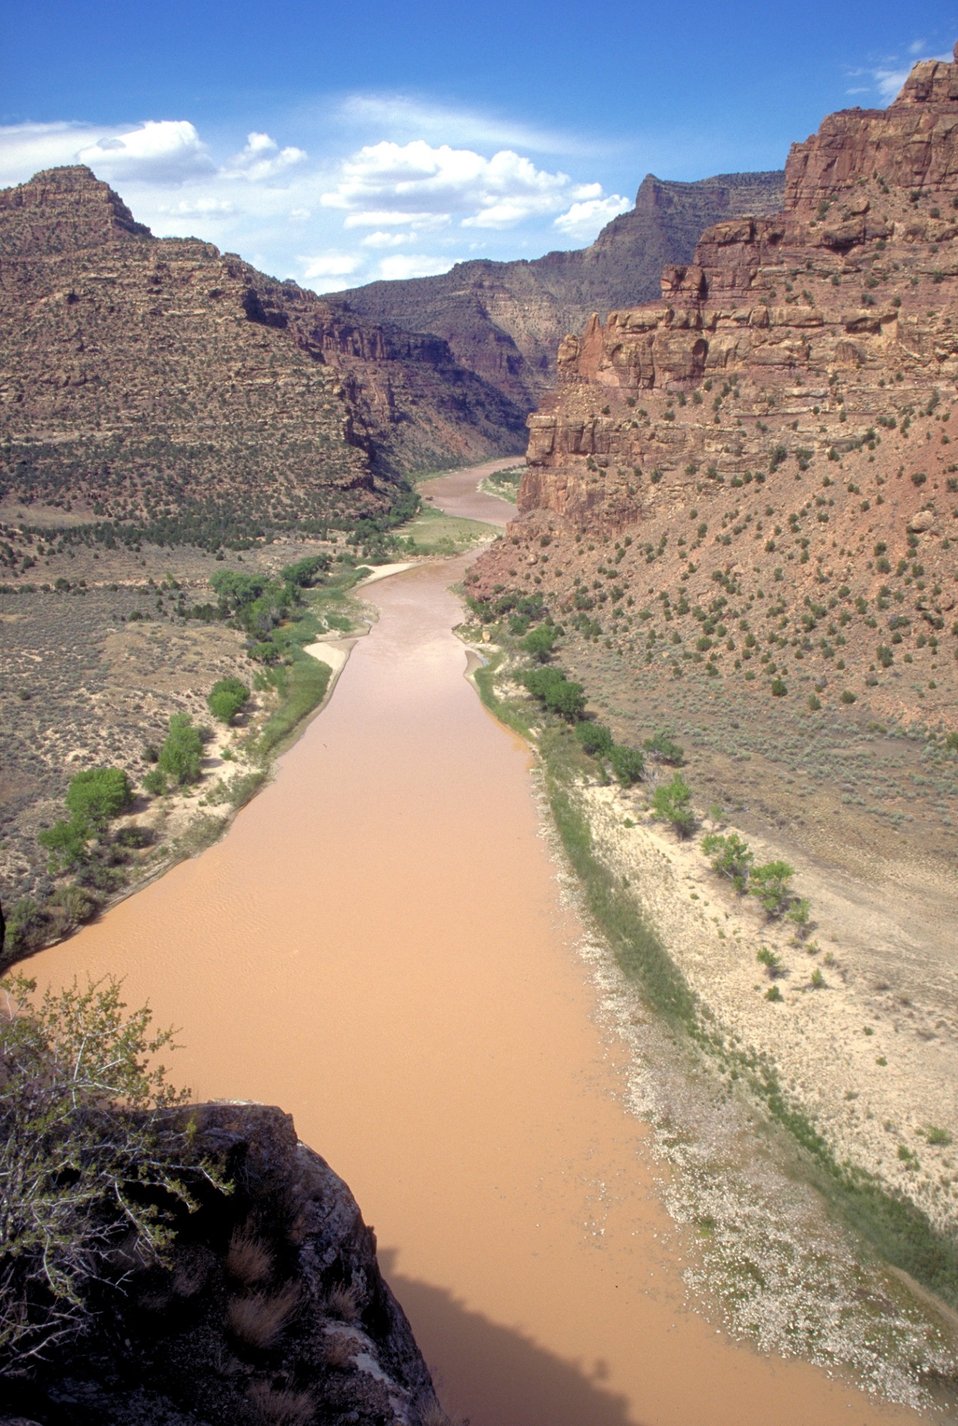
Desolation/Gray Canyons near Price, Utah.